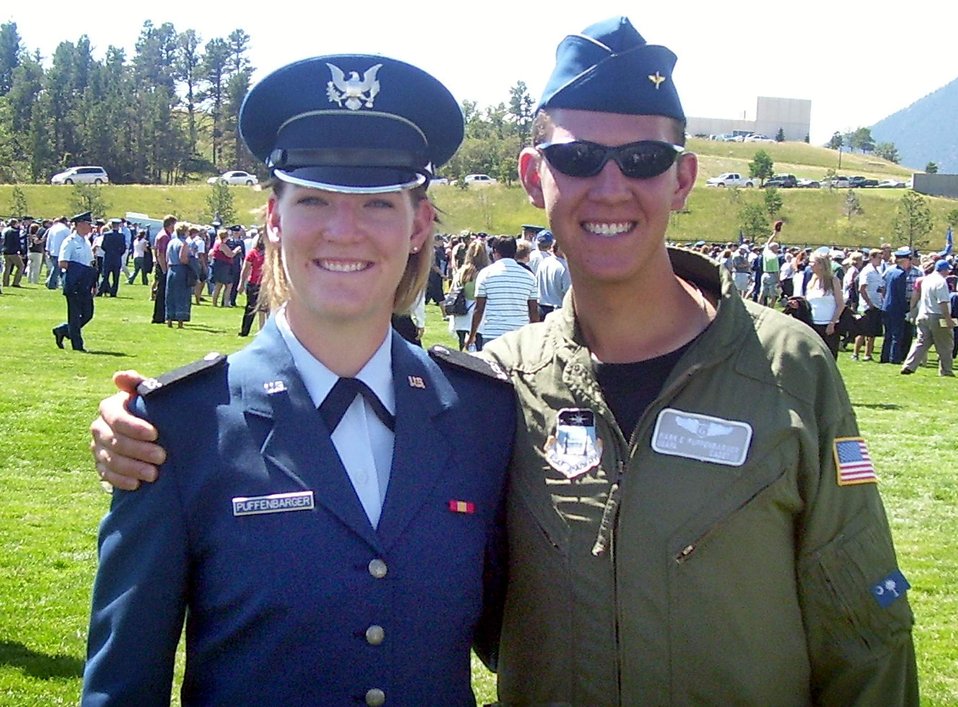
Cancer survivor

Academy graduate and cancer survivor Mark Puffenbarger, then a Cadet 1st Class, joined his underclassman sister Haley for a photo.